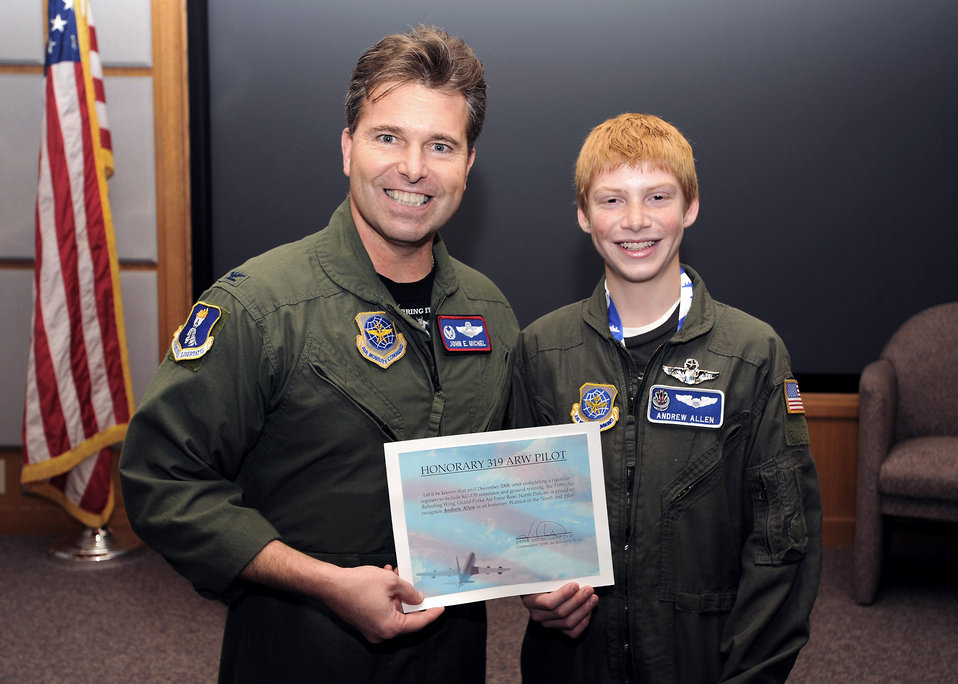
Teen gets to be pilot for a day

Col. John Michel presents Andrew Allen with a set of honorary pilot wings and a certificate at a presentation ceremony Dec. 5 at Grand Forks Air Force Base, N.D. Colonel Michel is the 319th Air Refueling Wing commander.